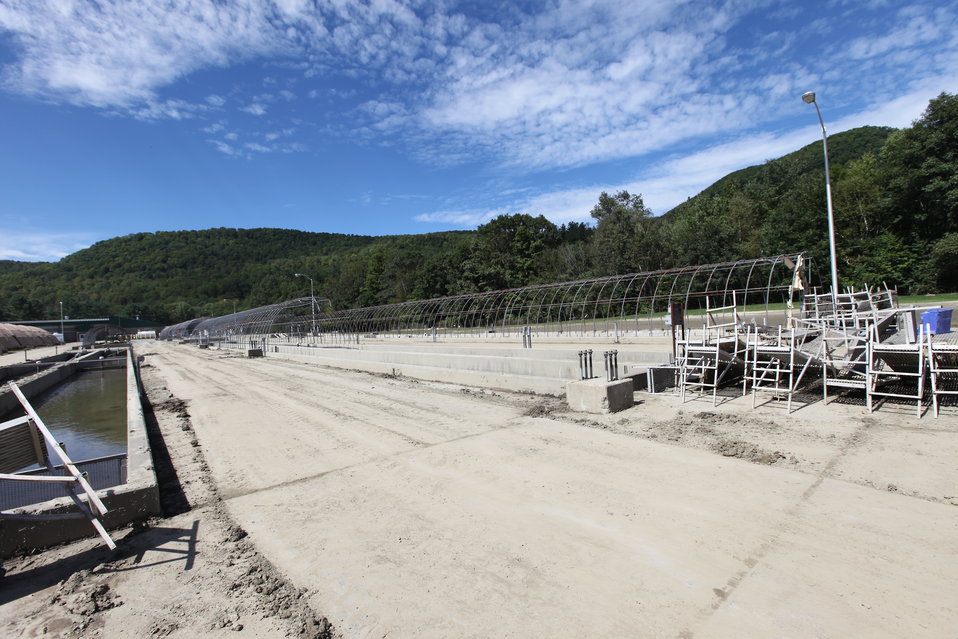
Storm damage relief at White River NFH

Heavy equipment operators came from other USFWS stations to help clean up.